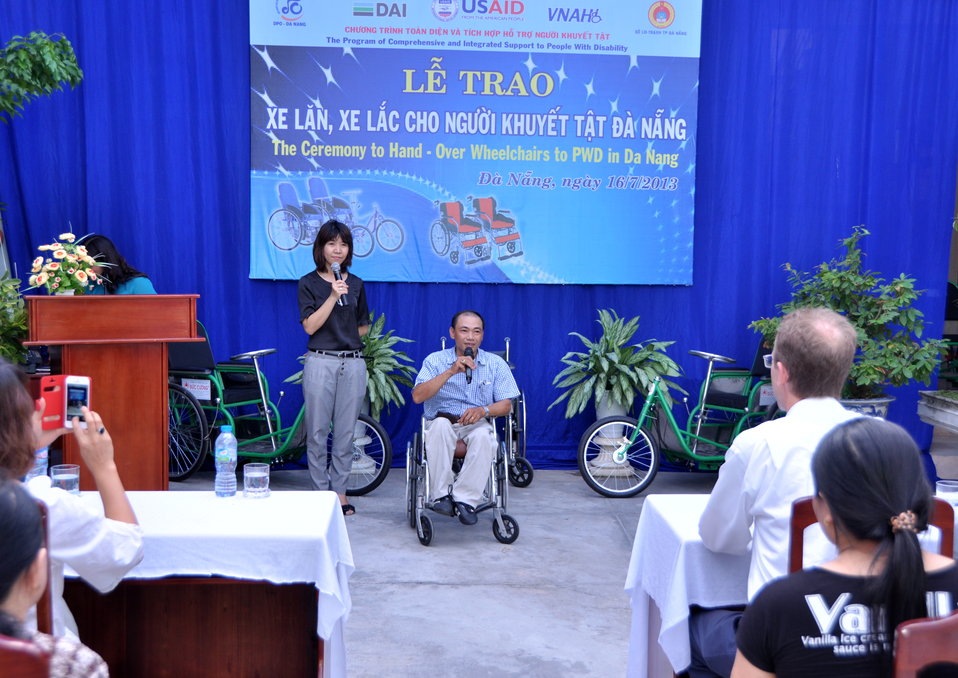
USAID Project Supports Rehabilitation Department for Children and Wheelchair Distribution in Danang

Danang, July 16, 2013